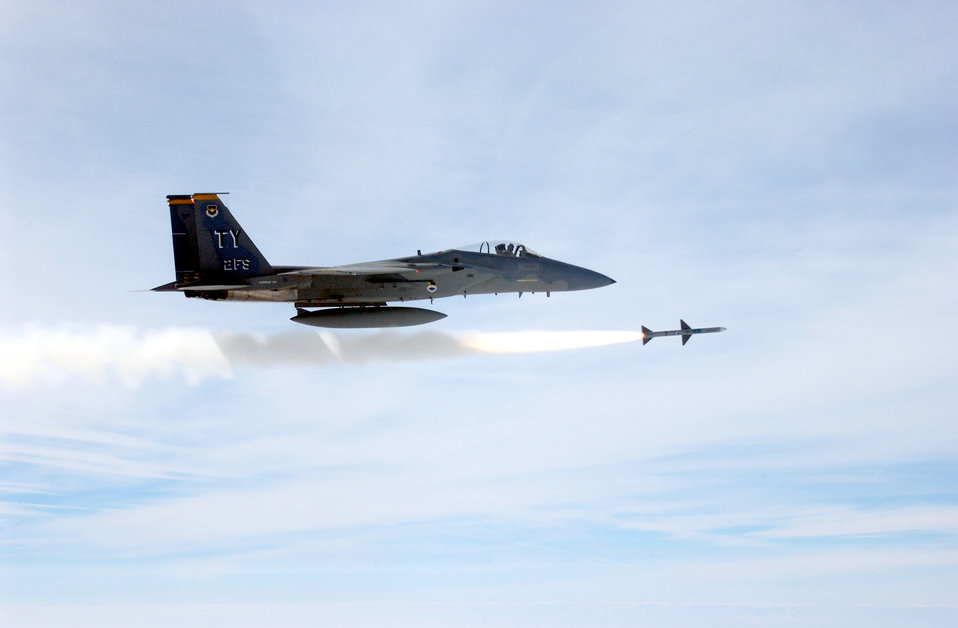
The 'drone' ranger

OVER THE GULF OF MEXICO -- Maj. Phillip Campbell, an F-15 Eagle instructor pilot, fires a radar-guided, air-to-air AIM-7 Sparrow at an aerial target drone during a weapons evaluation mission March 1. The major is assigned to the 95th Fighter Squadron at Tyndall Air Force Base, Fla.